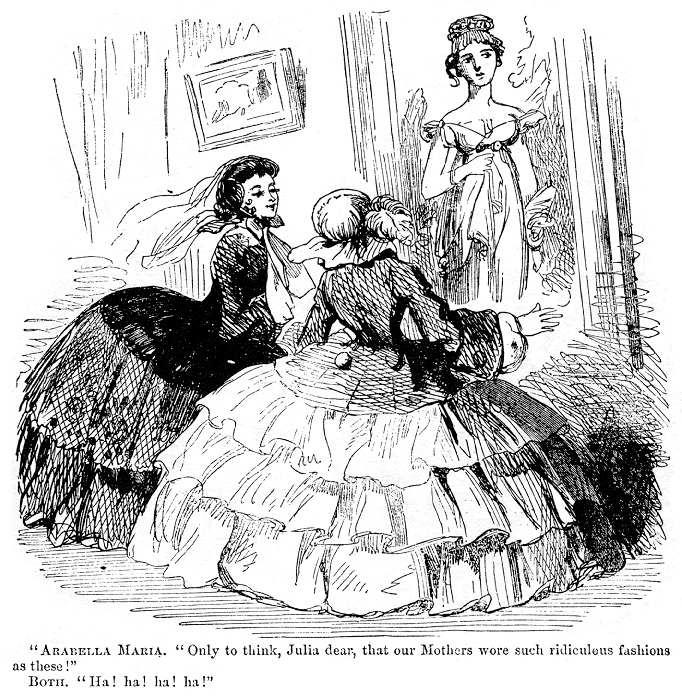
1857-regency-fashion-crinoline-comparison-joke